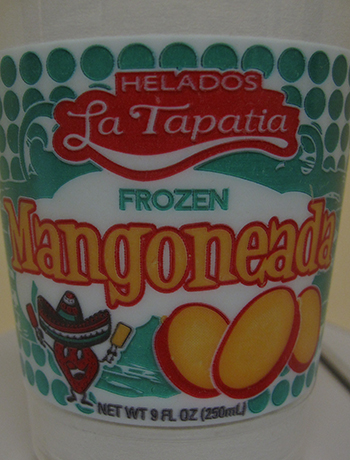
RECALLED – Ice cream products

March 19, 2014 – Product Recall – Helados La Tapatia, Inc. Recalls Products Because of Possible Health Risk.